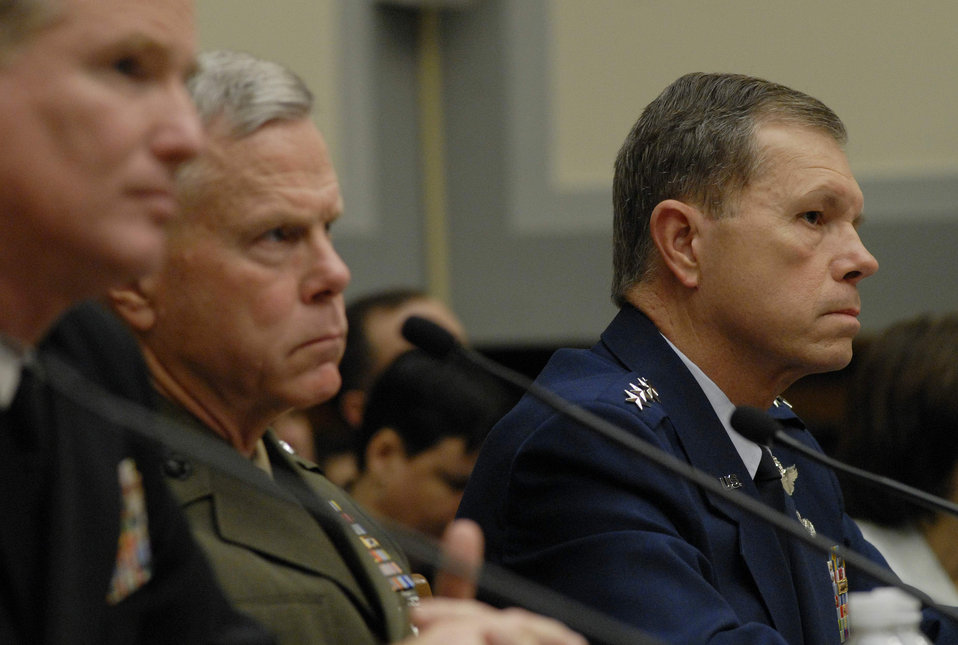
Services address readiness subcommittee

Vice Chief of Staff Gen. William M. Fraser III, along with his counterparts from the Army, Navy and Marines, addressed the House Armed Services Committee's Subcommittee on Readiness May 20. During the hearing General Fraser addressed fiscal 2010 Operation and Maintenance Budget requests. He also discussed how 18 years of continuous combat deployments have strained Air Force readiness and how current fiscal realities required difficult decisions to balance the force. General Fraser emphasized that Airmen's efforts and the programs funded within the fiscal 2010 budget will help ensure the Air Force is ready to execute its missions with precision and reliability.